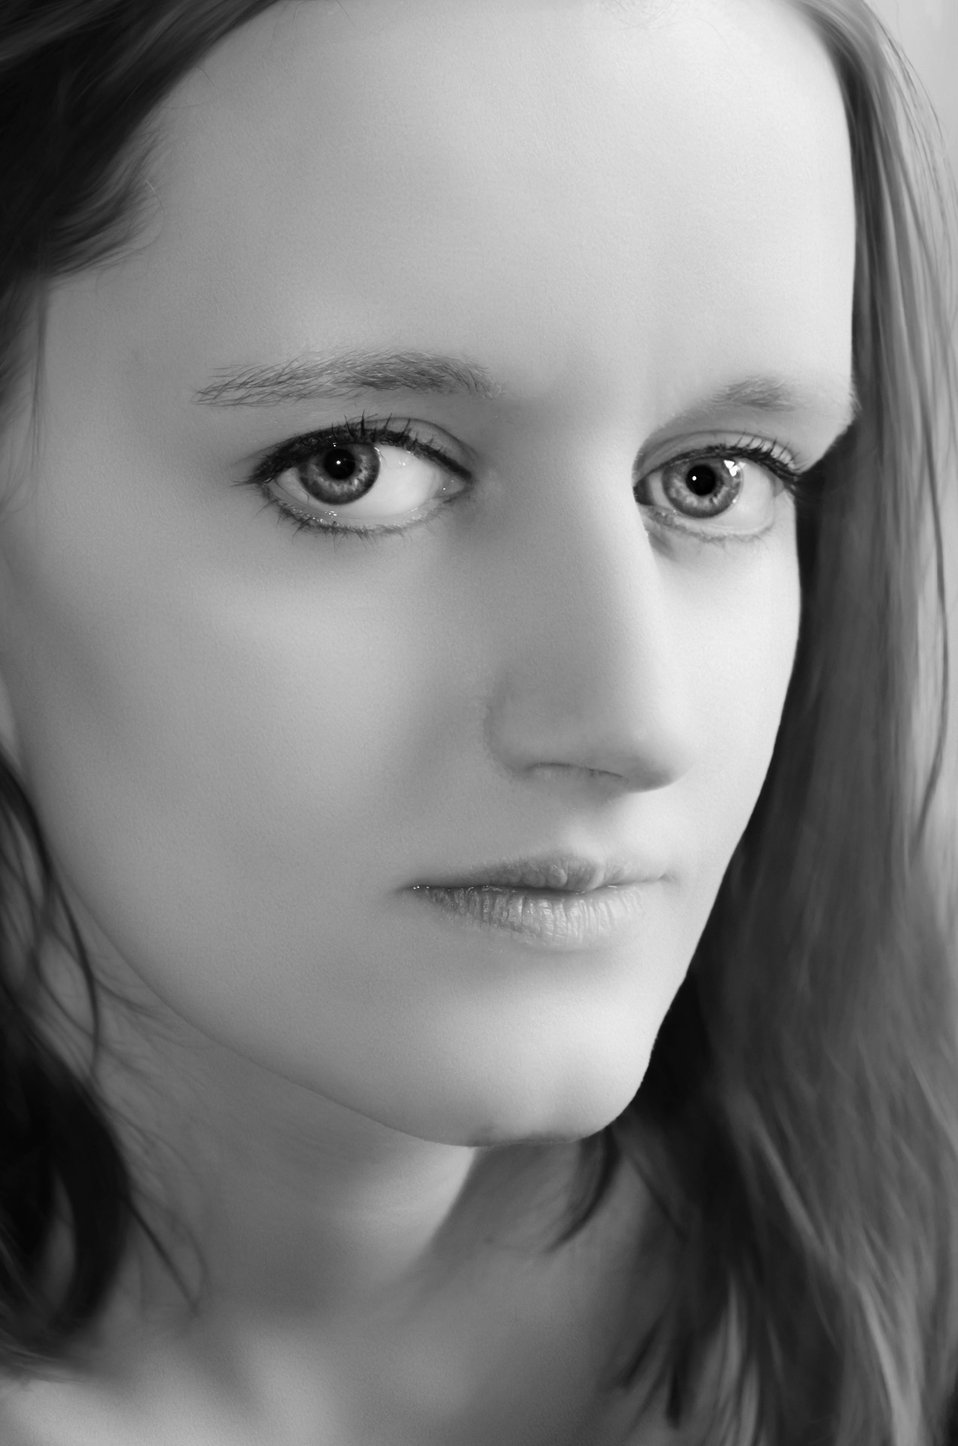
Woman - portrait.